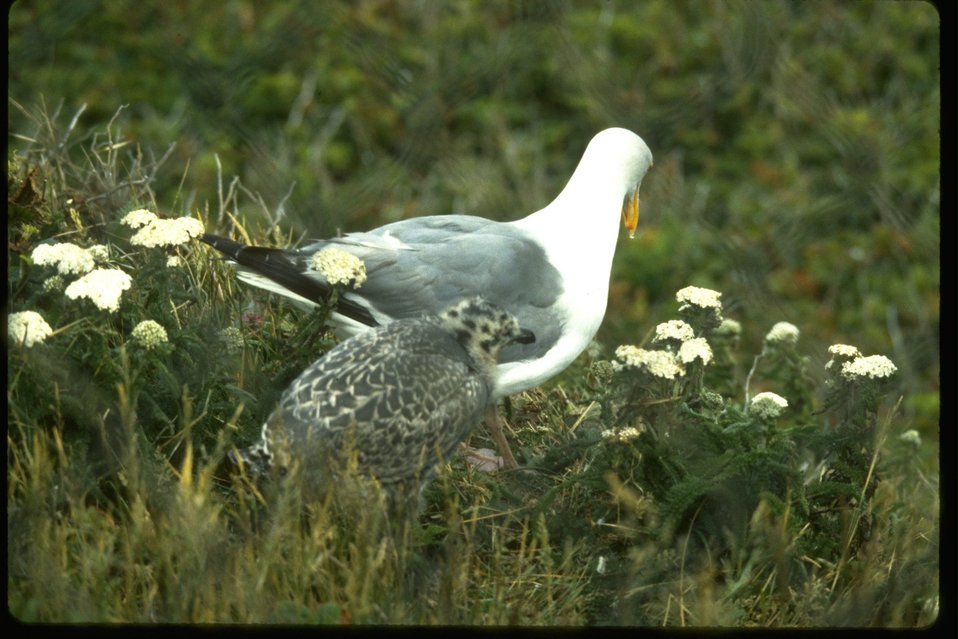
Western Gull with a first year immature in the Yaquina Head ONA.